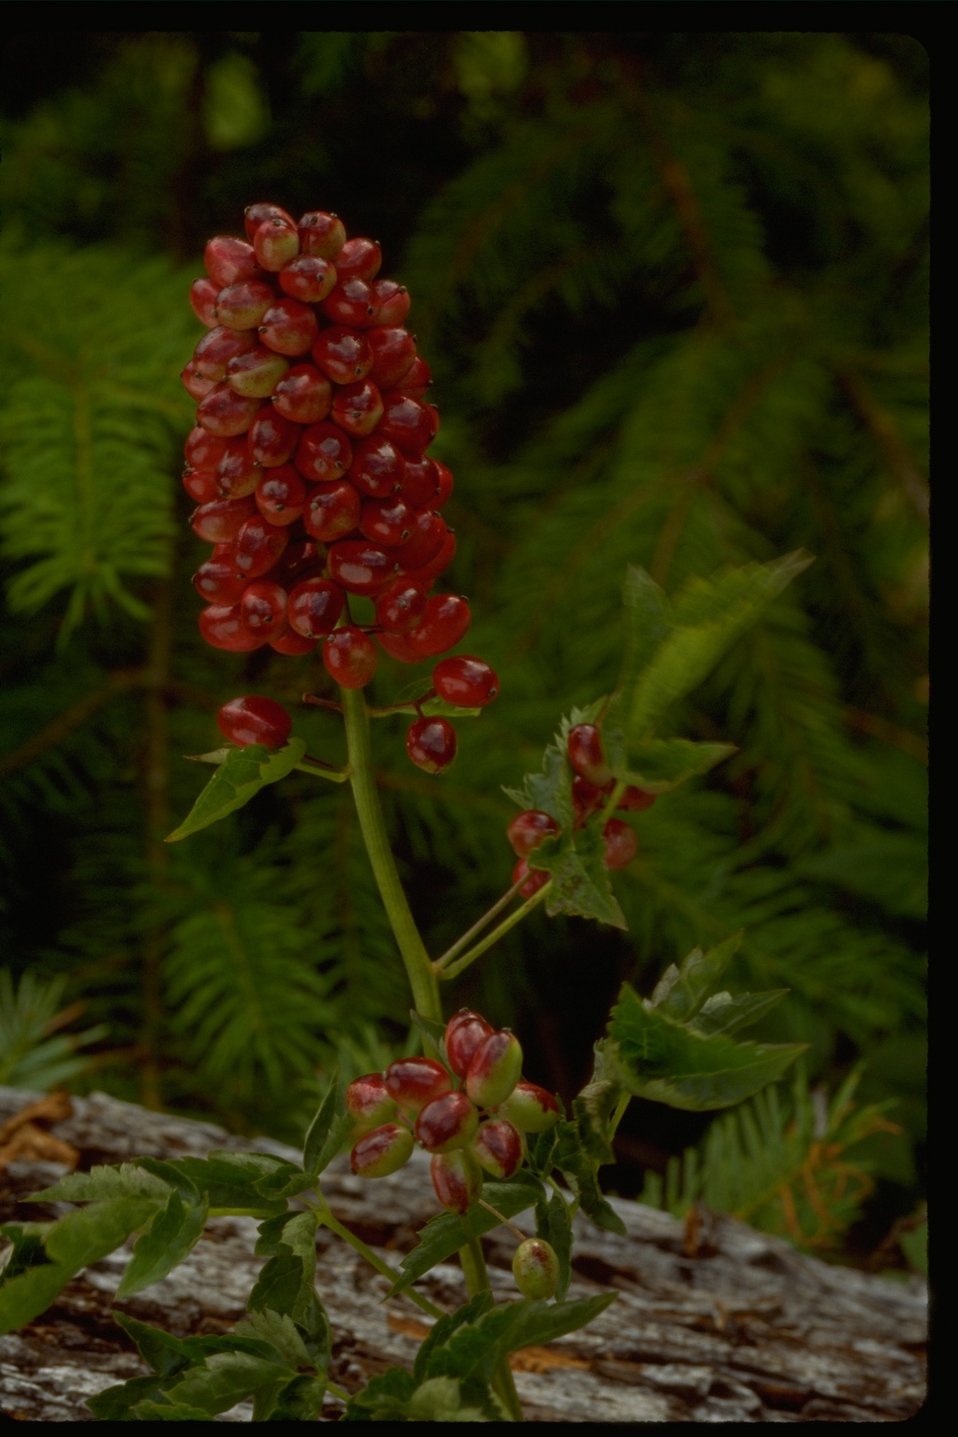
Mountain Ash Berries.